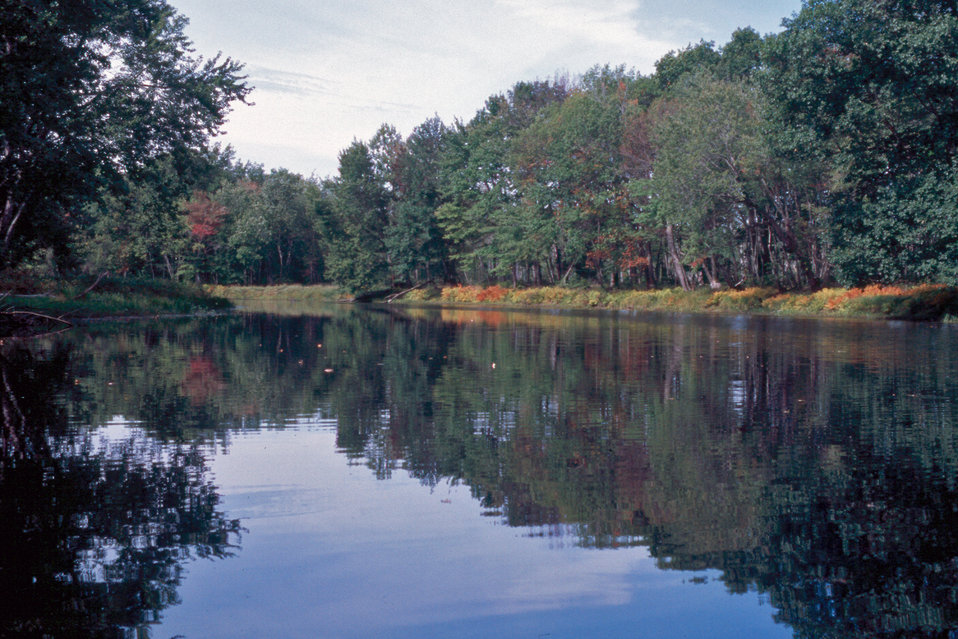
Lower Sunkhaze Stream

Sunkhaze Meadows National Wildlife Refuge, ME.